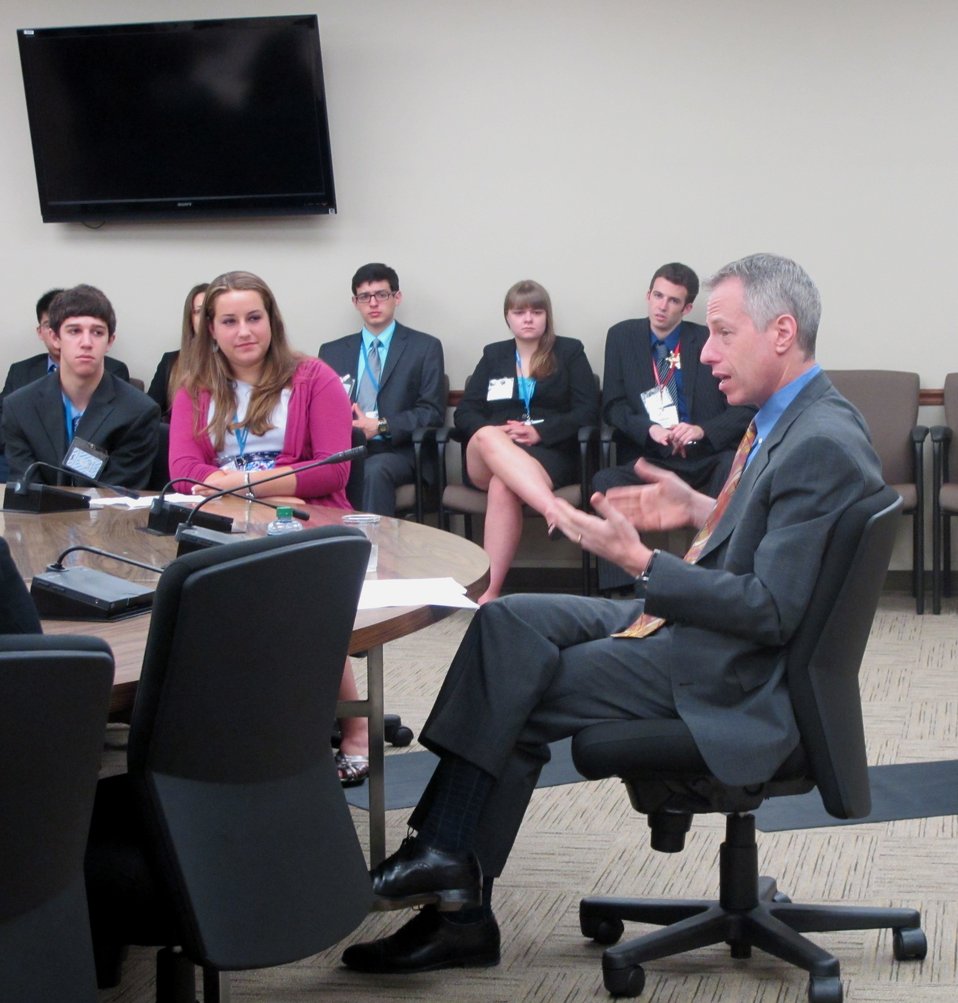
Deputy Assistant Secretary Ratney Addresses Students From the National Student Leadership Conference

Public Affairs Deputy Assistant Secretary (DAS) for International Media Michael Ratney speaks to a group of over 50 students from the National Student Leadership Conference visiting the Harry S. Truman building on July 5, 2011. DAS Ratney briefed the students with an overview of the U.S. Department of State and U.S. foreign policy priorities.